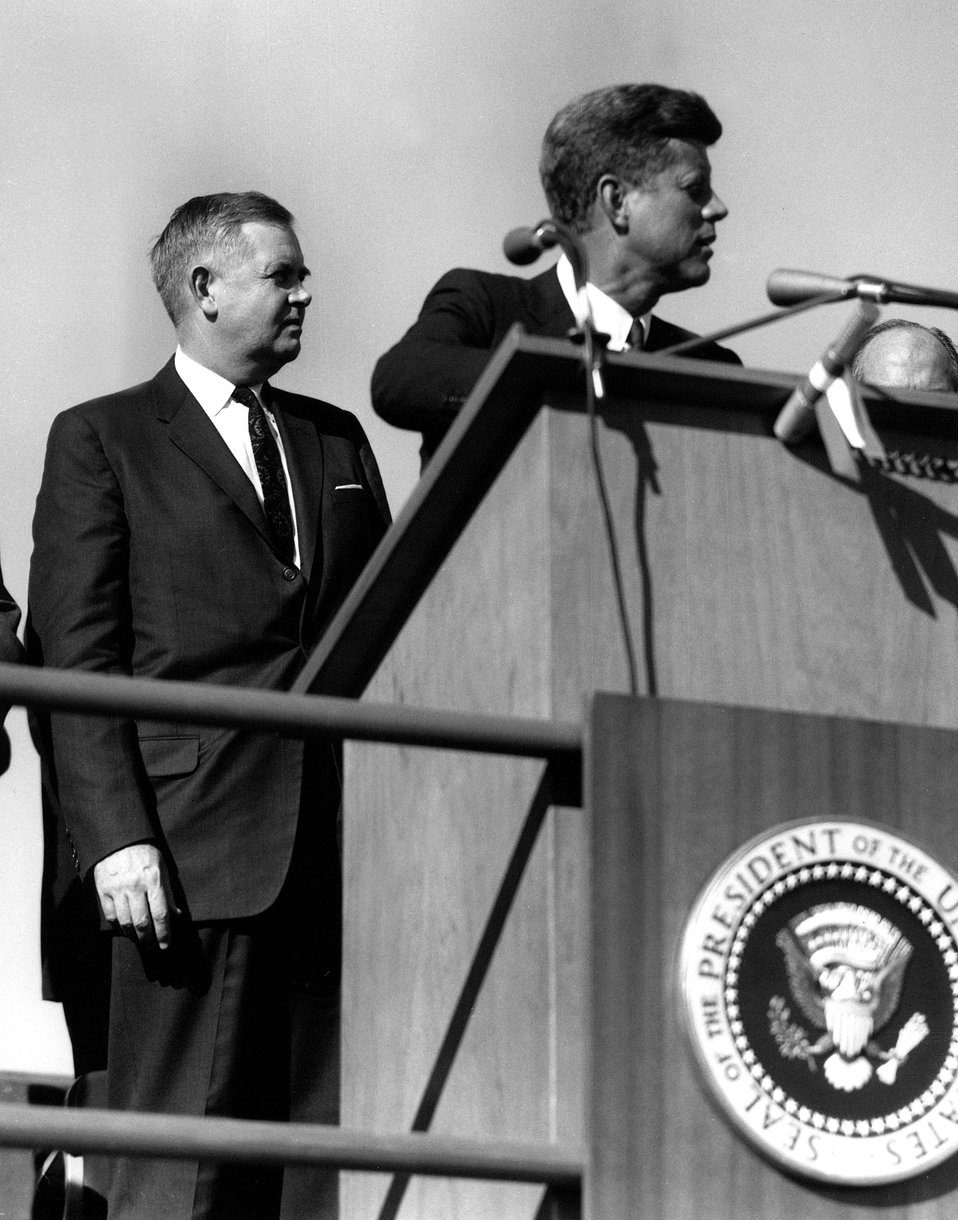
The late President Kennedy used an atomic pointer to start an automated 60-foot crane that broke ground on September 26 for construction by the Washington Public Power Supply System of an 800,000 electrical kilowatt generating plant which will use byproduct steam from the AEC's New Production Reactor at the Hanford works in Washington..